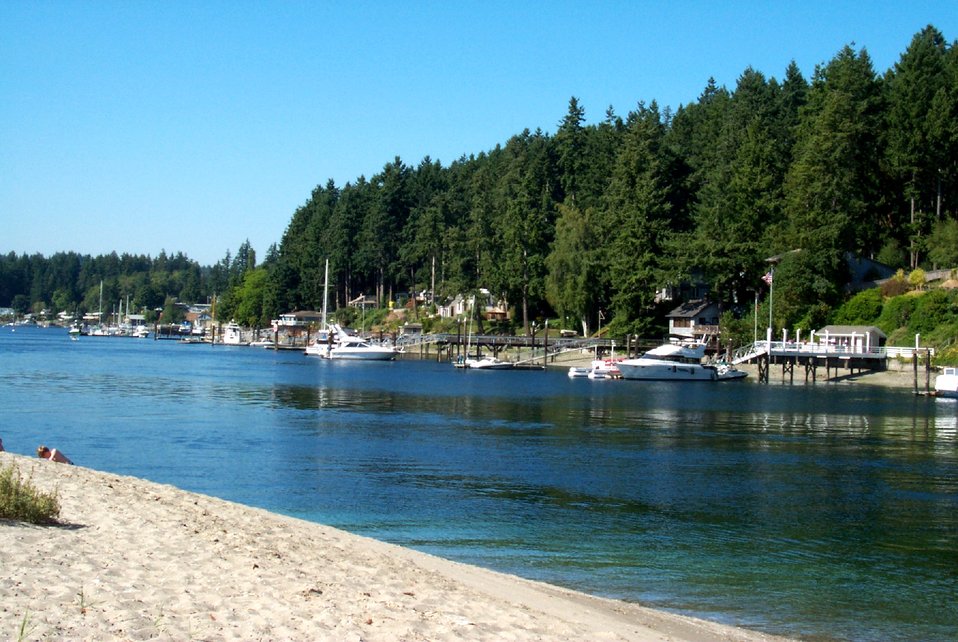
A view of private boat docks from one of the few sandy beach areas in the Gig Harbor area.